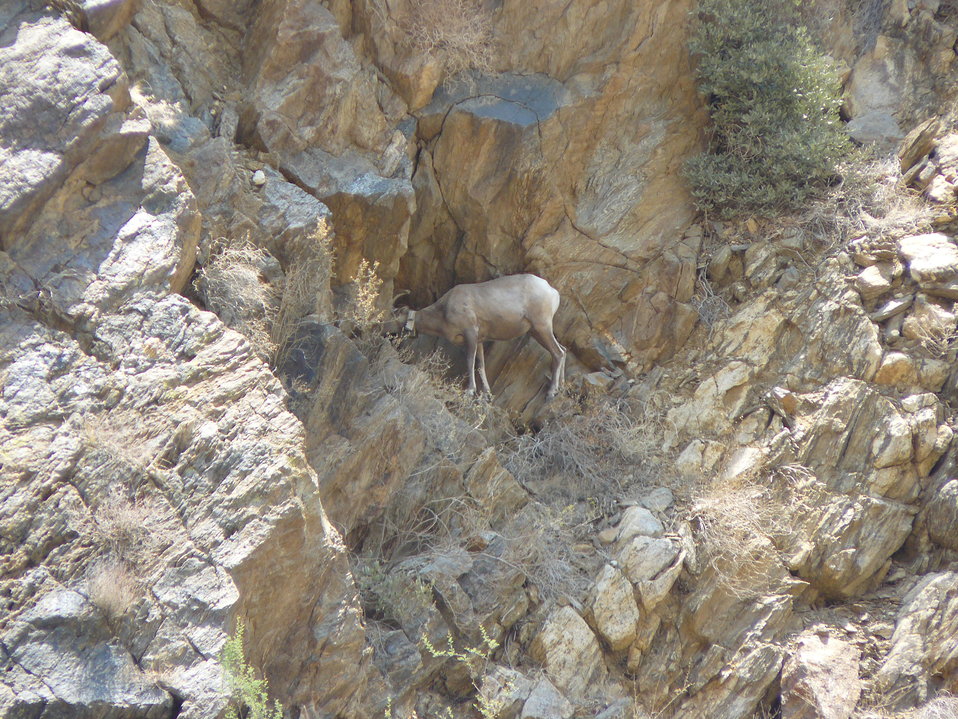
Endangered Peninsular Ranges Population of Desert Bighorn Sheep

This ewe is foraging in Anza Borrego Desert State Park, California.